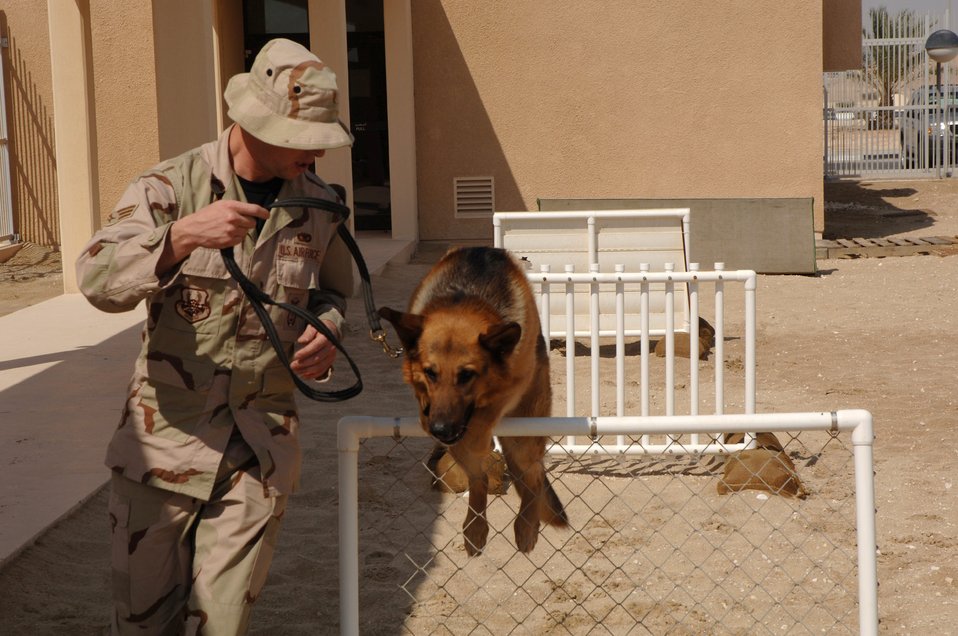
Partners in the desert

SOUTHWEST ASIA (AFPN) -- Senior Airman Brooks Sevin leads his military working dog, Rex, over hurdles at a deployed location Feb. 24. Airman Sevin and Rex, a German shepherd, are with the 379th Expeditionary Security Forces Squadron.